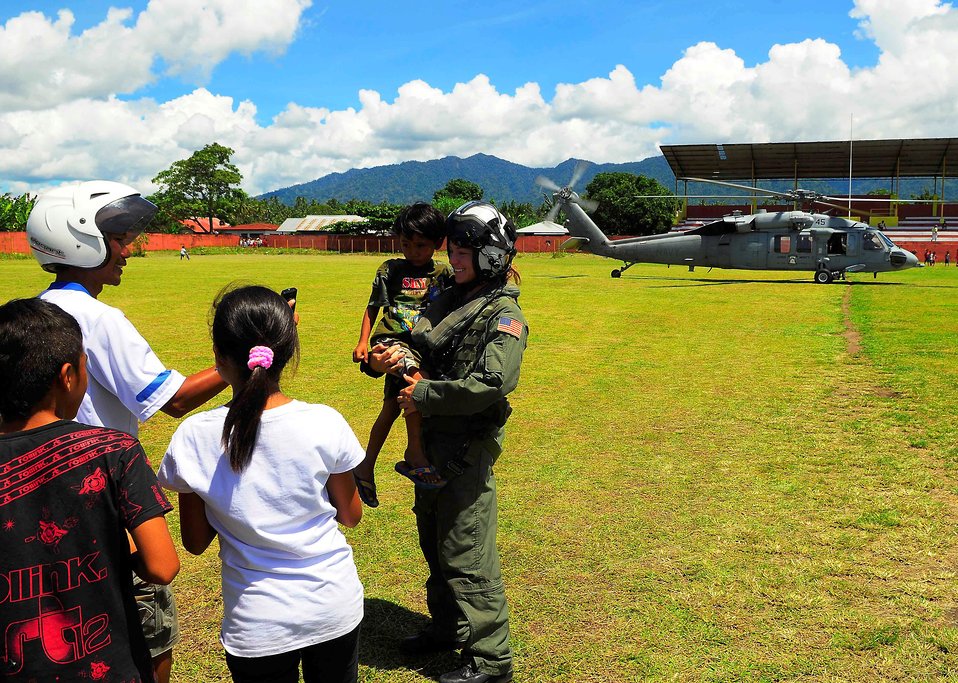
Helicopter Sea Combat Squadron 23 “Wild Cards” Naval Air Crewman 2nd Class (AW) Kyle Parrish embraces a small boy for a photo, after an MH-60S Knighthawk helicopter disembarked crewmembers from the Military Sealift Command hospital ship USNS Mercy (T-AH 19) in support of Pacific Partnership 2010 in Tobelo, Indonesia, on July 13, 2010. Pacific Partnership 2010 is the fifth in a series of annual U.S. Pacific Fleet humanitarian and civic assistance endeavors to strengthen regional partnerships.